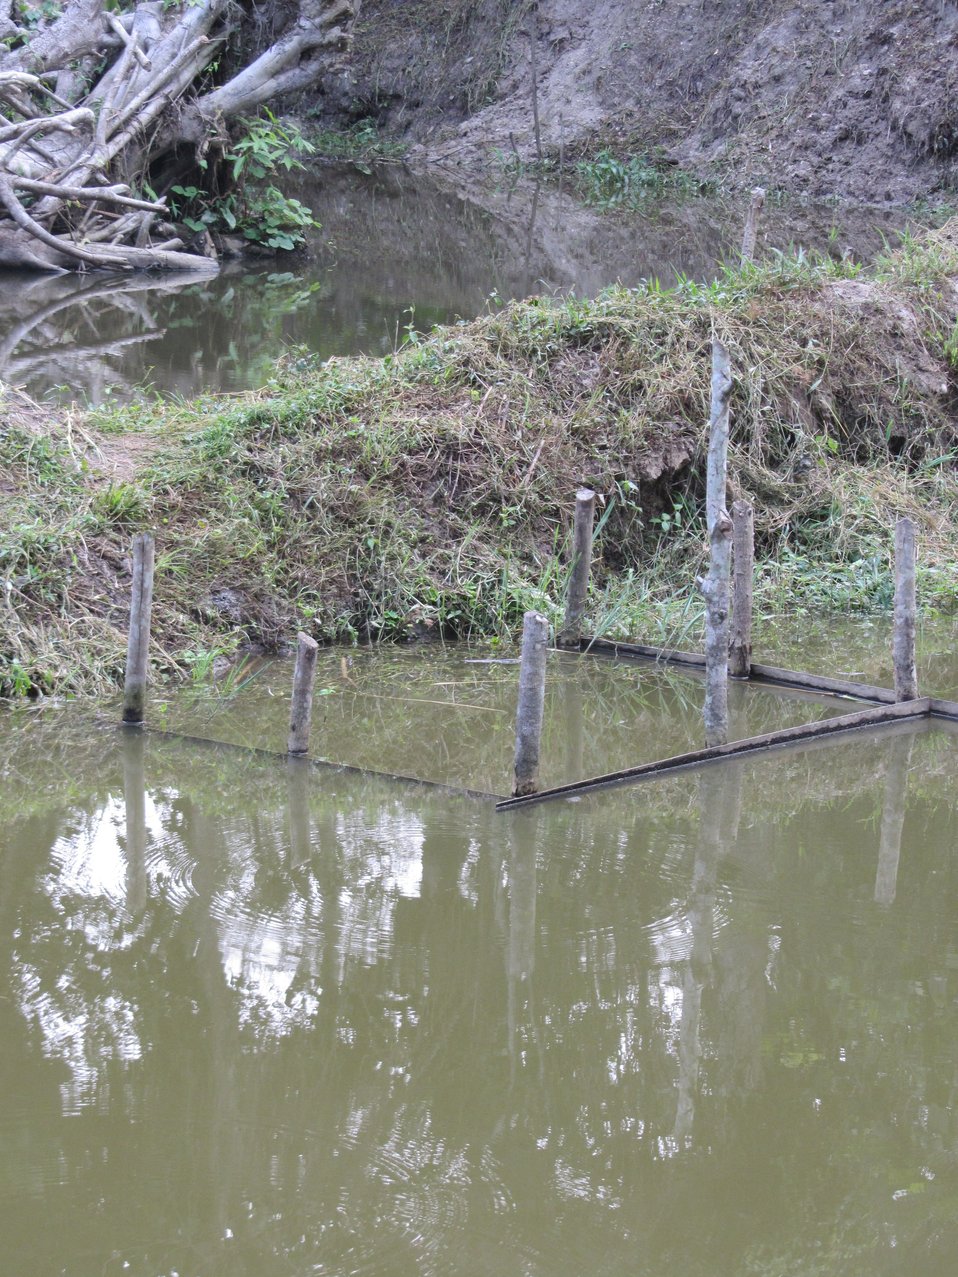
Special Advisor Brooks-Rubin Captures a Photo of a Mined-Out Site Now Used To Breed and Harvest Fish

Special Advisor for Conflict Diamonds Brad Brooks-Rubin captures of a photo of a mined-out site that is now used to breed and harvest fish, sometimes earning communities more money than diamond did, in Central African Republic in 2011.